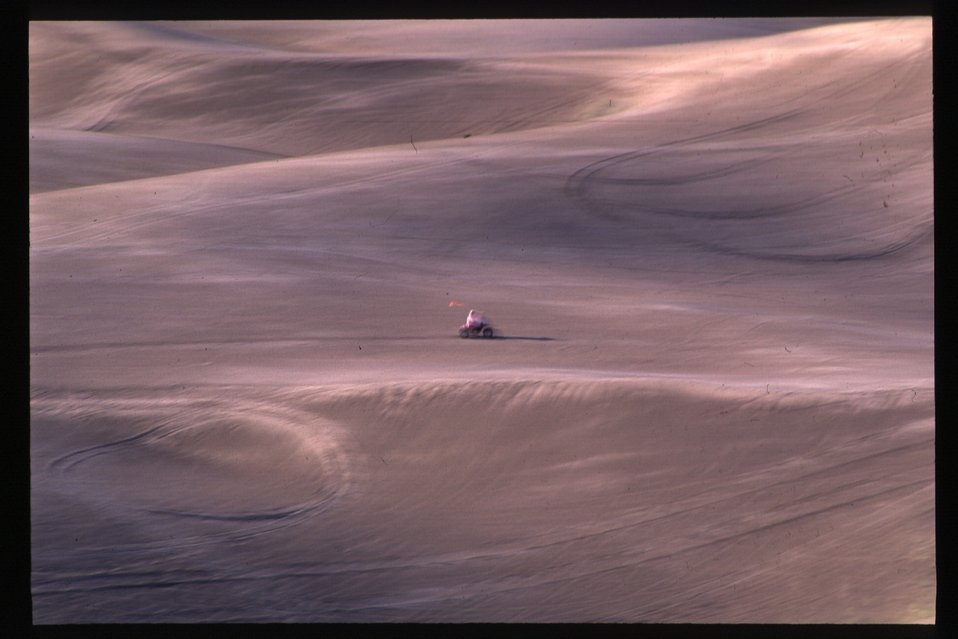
Recreation St Anthony Sand Dunes Off Highway Vehicles Idaho Falls Field Office USRD Upper Snake River District